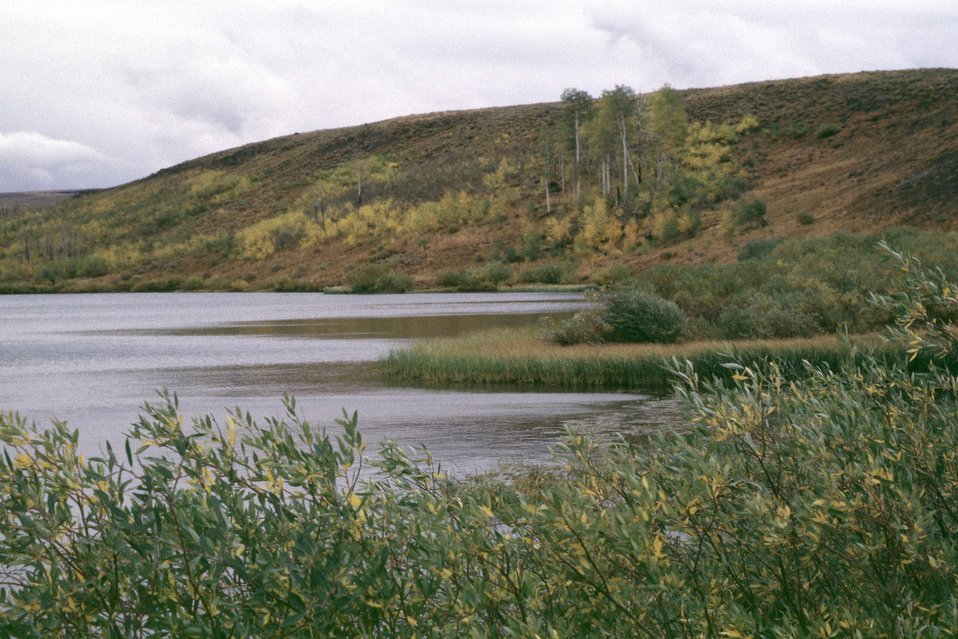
Fish Lake, Steen's Mountain.